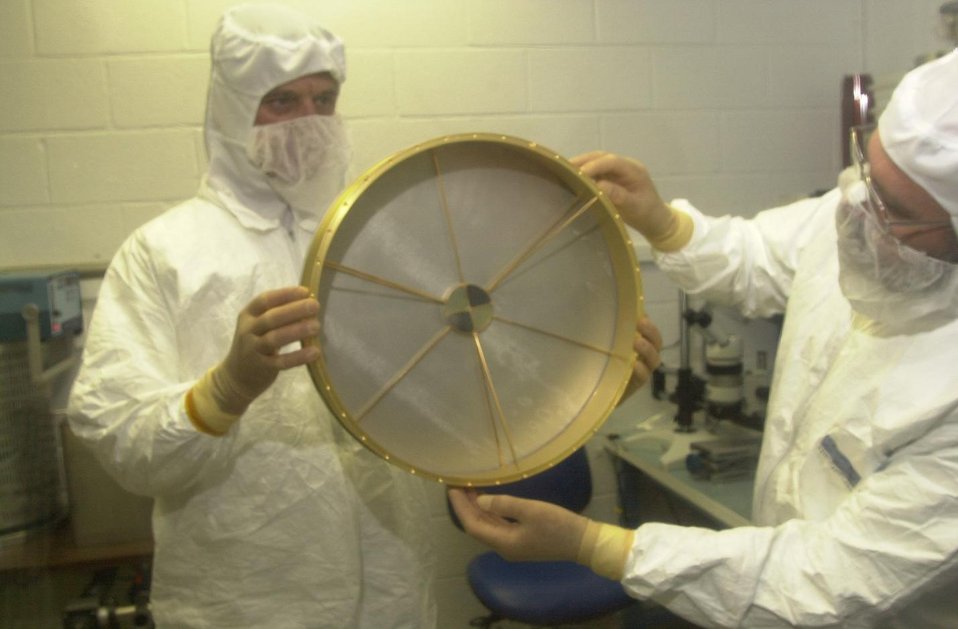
LANL SCIENTISTS INSPECT THE GENESIS SPACECRAFT SOLAR WIND CONCENTRATOR BEING ASSEMBLED IN LANL CLEANROOM.

THE SOLAR WIND CONCENTRATOR, ION MONITOR AND ELECTRON MONITOR WERE DESIGNED AND BUILT BY A TEAM OF SCIENTISTS AND ENGINEERS AT LOS ALAMOS NATIONAL LAB FOR THE GENESIS SPACECRAFT. THE SOLAR WIND CONCENTRATOR IS DESIGNED TO COLLECT A HIGH CONCENTRATION OF OXYGEN AND RETURN THE SAMPLE TO EARTH FOR ANALYSIS. THE ION AND ELECTRON MONITORS INSTANTANEOUSLY DETERMINE WHICH TYPE OF SOLAR WIND IS PASSING THE SPACECRAFT AND TRANSLATE THE KNOWLEDGE INTO ACTIONS FOR THE SOLAR WIND CONCENTRATOR AND SOLAR WIND COLLECTOR ARRAYS.